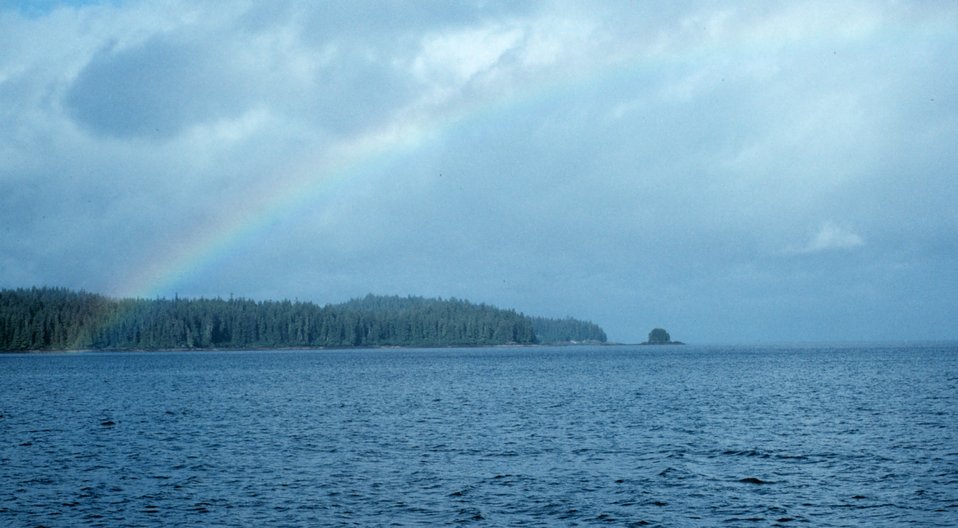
Rainbow in Frederick Sound